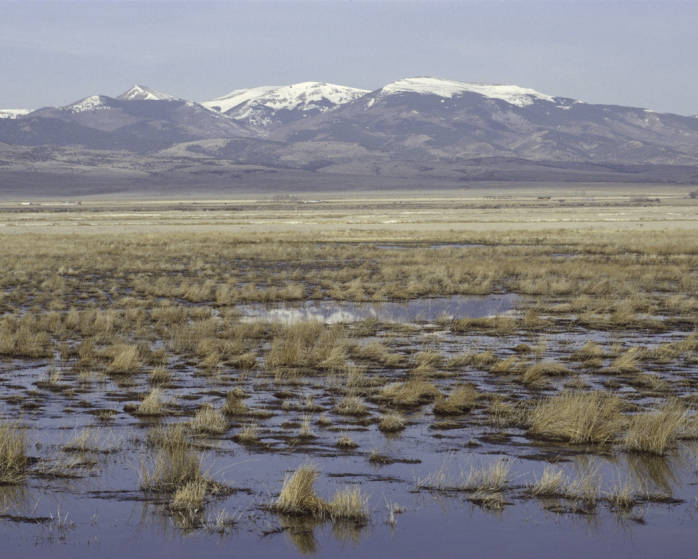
Alamosa National Wildlife Refuge

Scenic View in Alamosa National Wildlife Refuge in Colorado.